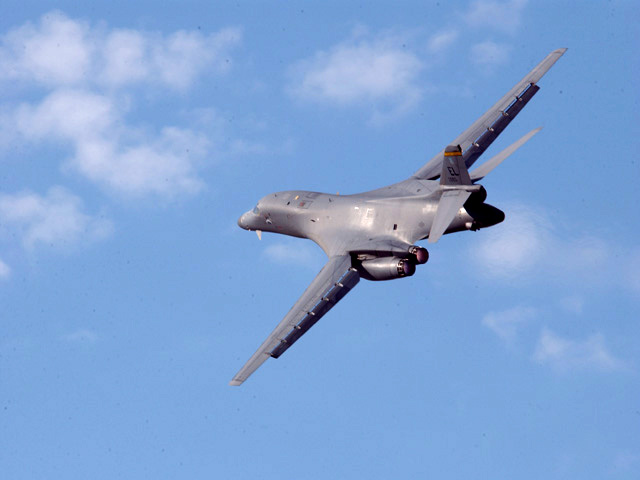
Lancer operations

A B-1 Lancer from the 28th Bomb Wing flies over Ellsworth Air Force Base, S.D., on Tuesday, June 27, during an operational readiness exercise. The B-1 is loaded with dummy bombs during the exercise.